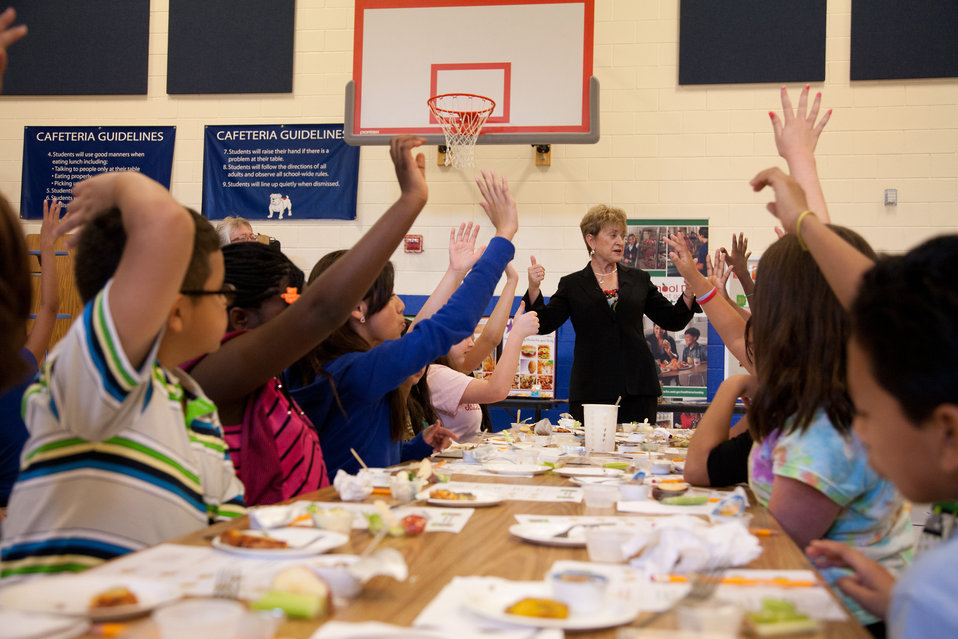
Agriculture's Food and Nutrition Service Deputy Under Secretary Dr. Janey Thornton spent time with more than 50 students from the 5th grade classes at Yorkshire Elementary School in Manassas, VA. The students participated in a taste testing of the new school lunch menu created to meet the new standards. Students tested a sample menu of black-bean filled pizza, plantain, pineapple spear, sunny broccoli and cauliflower toss, and an apple and celery cup with sunbutter dip (a peanut butter substitution), on Wednesday, September 5, 2012.